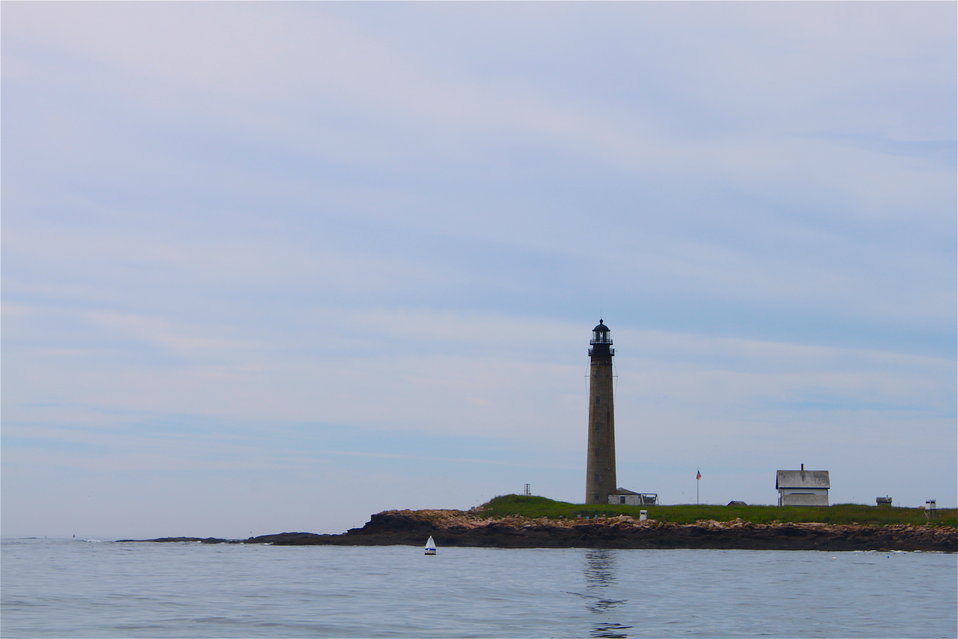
Petit Manan Island From Boat